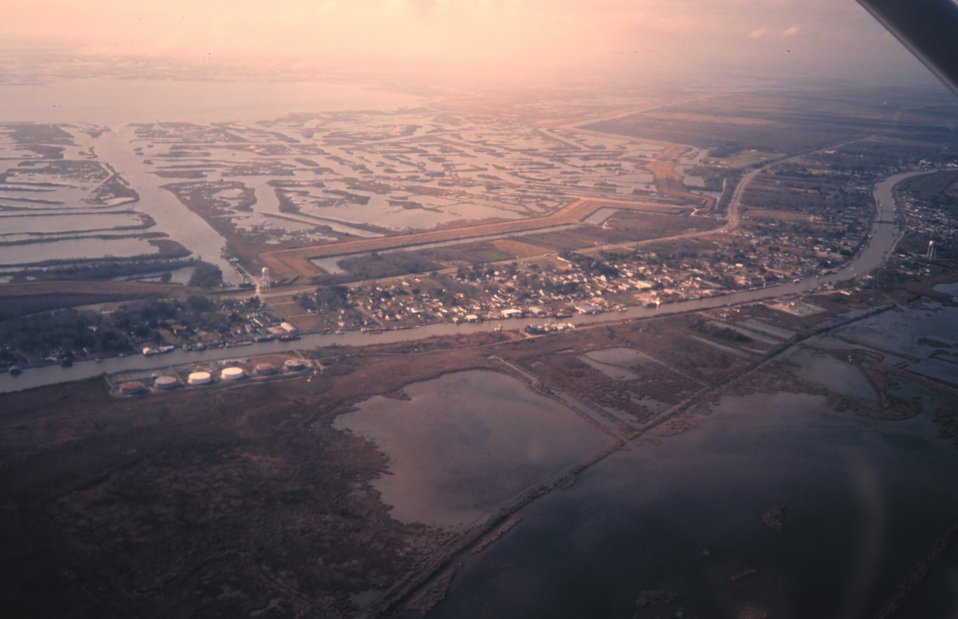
Homes and businesses built along the levee ridge of Bayou Lafourche.